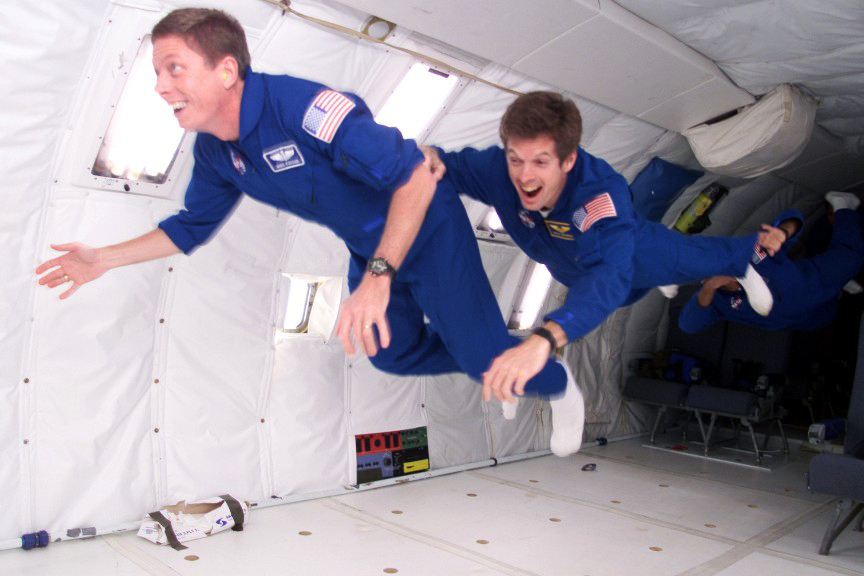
Floating around

HOUSTON -- Lt. Col. Michael Fossum (left) and fellow astronaut Steven Swanson train inside a specially built KC-135 Stratotanker at NASA's Johnson Space Center here for an upcoming mission. During initial astronaut training, the modified aircraft is used to test tools and basic techniques in moving around in zero gravity. Colonel Fossum is a reservist assigned to the F-16 system program office at Wright-Patterson Air Force Base, Ohio.